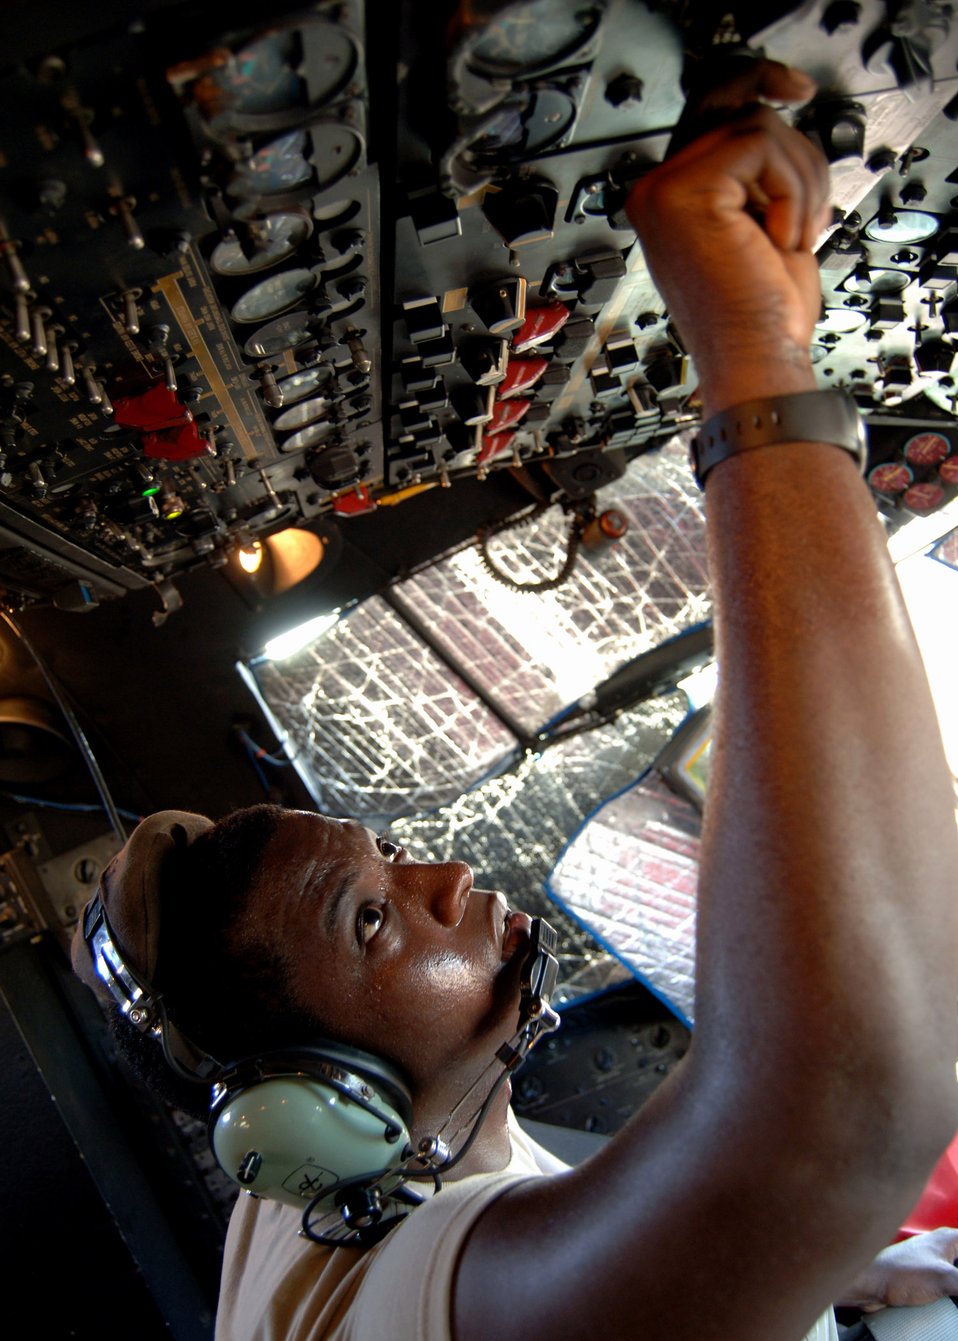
Preflight preparations

Staff Sgt. Freddie Bryant conducts a preflight inspection on a C-130 Hercules Oct. 22 at Camp Lemonier, Djibouti. Sergeant Bryant is a crew chief for the 81st Expeditionary Rescue Squadron.